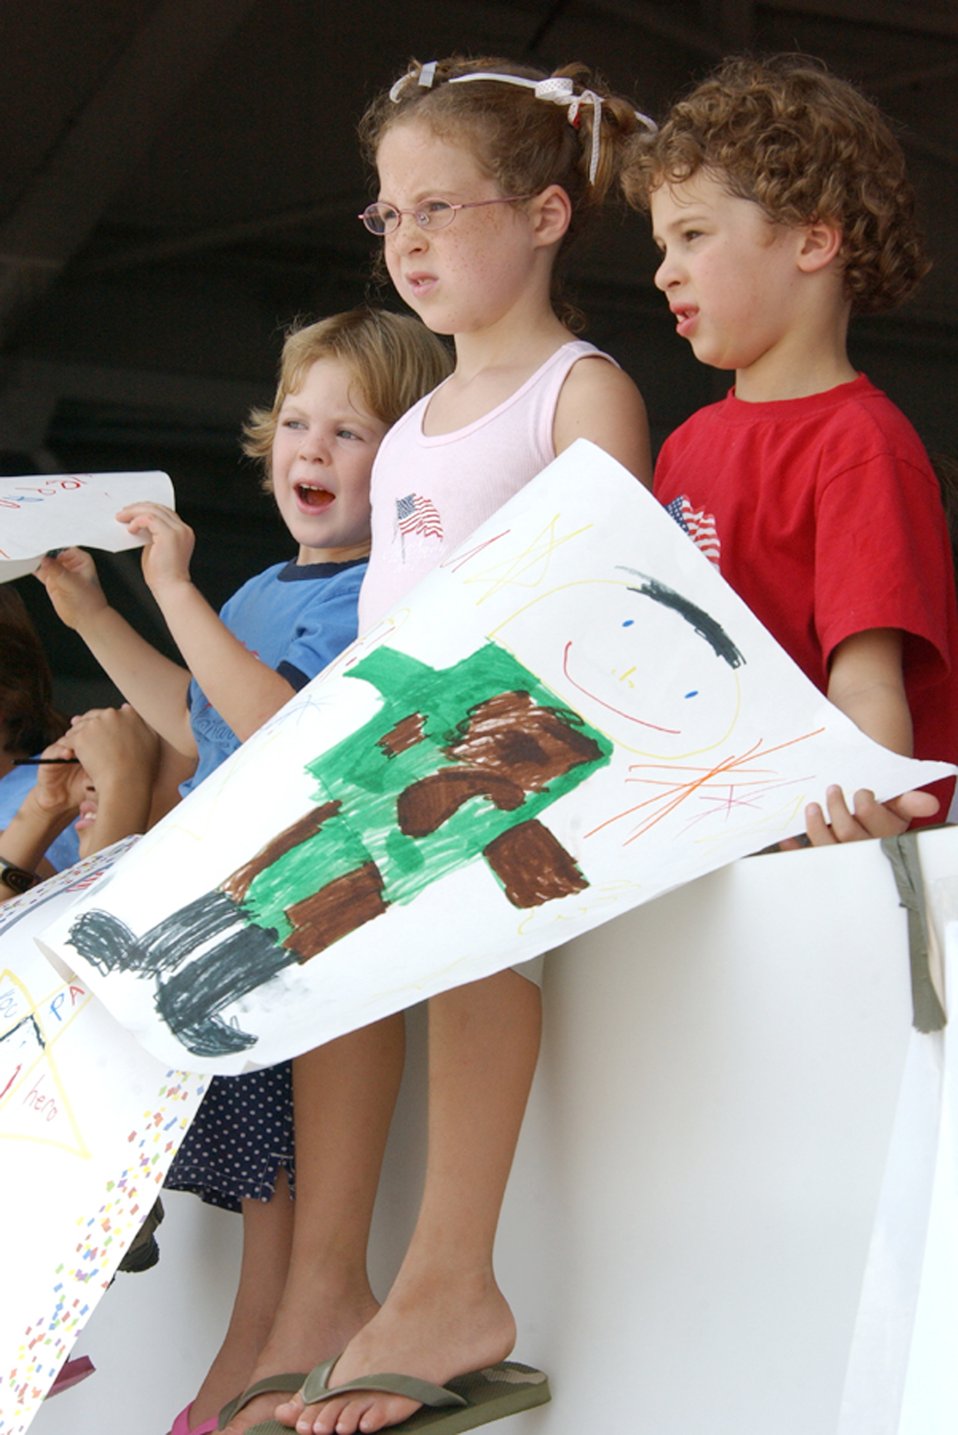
Happy holiday homecoming

Welcome home signs, like these waved proudly by children eagerly anticipating the return of their parents, added an extra touch of emotion to the patriotic homecoming at Hurlburt Field, Fla., July 4. More than 200 Airmen returned home to their families after deployments to Iraq and Afghanistan.